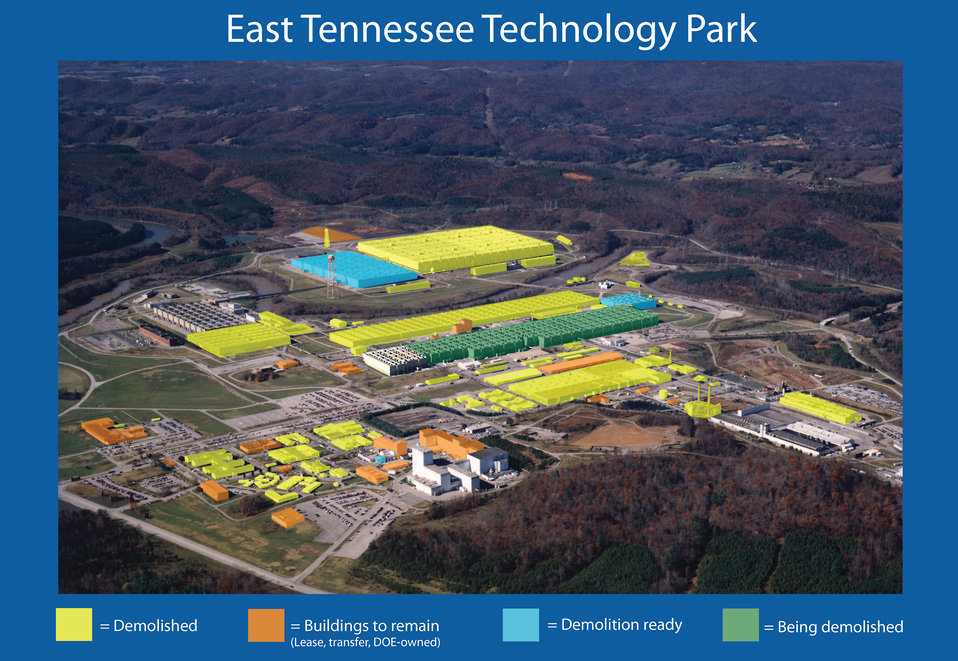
Aerial view at Oak Ridge

This aerial view gives an idea of the status of buildings at the East Tennessee Technology Park.